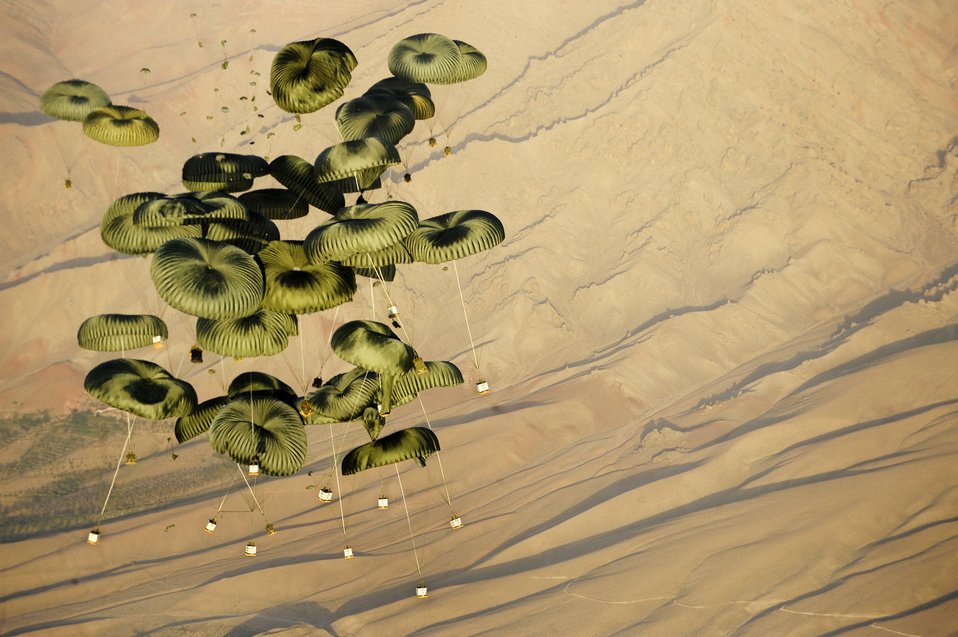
Supply drop in Afghanistan

Pallets of cargo drop from a C-17 Globemaster III to a forward operating base in Afghanistan, Aug. 27, 2009, in support of Operation Enduring Freedom. The aircraft is assigned to the 817th Expeditionary Airlift Squadron.